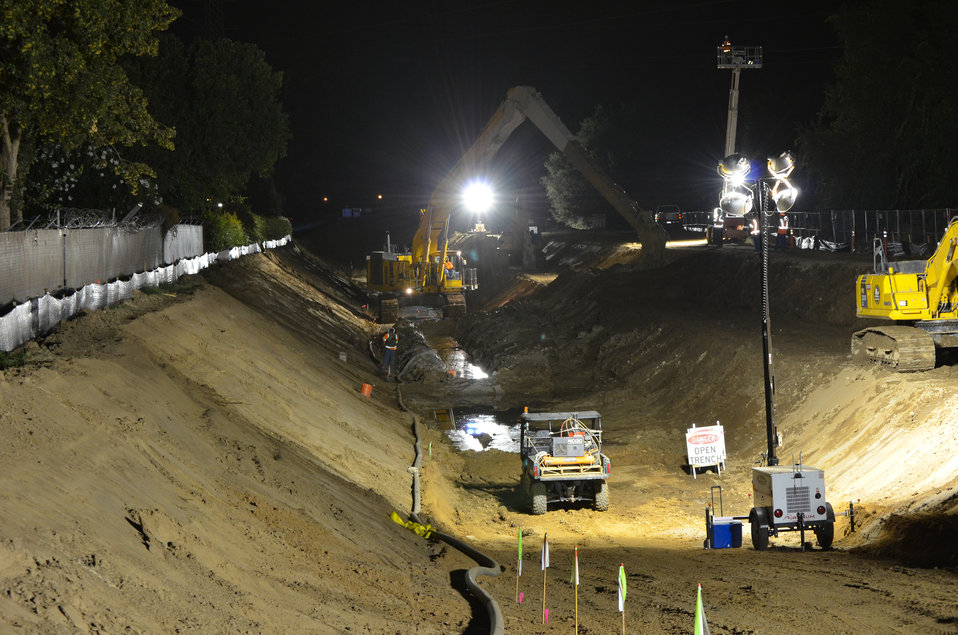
Seepage cutoff wall nighttime construction along the American River

Construction crews work in darkness--when energy demand is lowest--on a stretch of American River levee near the California State University-Sacramento campus Sept. 12, 2012 to close a 900-foot-long gap in a seepage cutoff wall underneath high power lines.
The Corps has built more than 20 miles of seepage walls into American River levees since 2000. Areas where construction was complicated by utilities, bridges or power lines were set aside for later construction.
The project is part of the American River Common Features project, a joint flood risk reduction effort between the Corps, the state’s Central Valley Flood Protection Board/Department of Water Resources and the Sacramento Area Flood Control Agency.